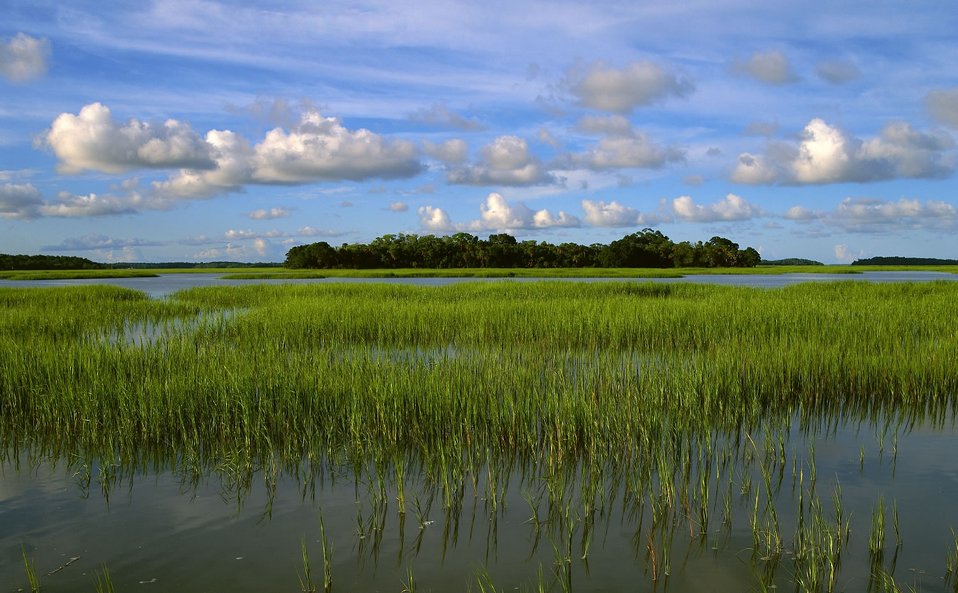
Pinckney Island NWR

Pinckney Island National Wildlife Refuge in South Carolina is a kayaker's paradise.